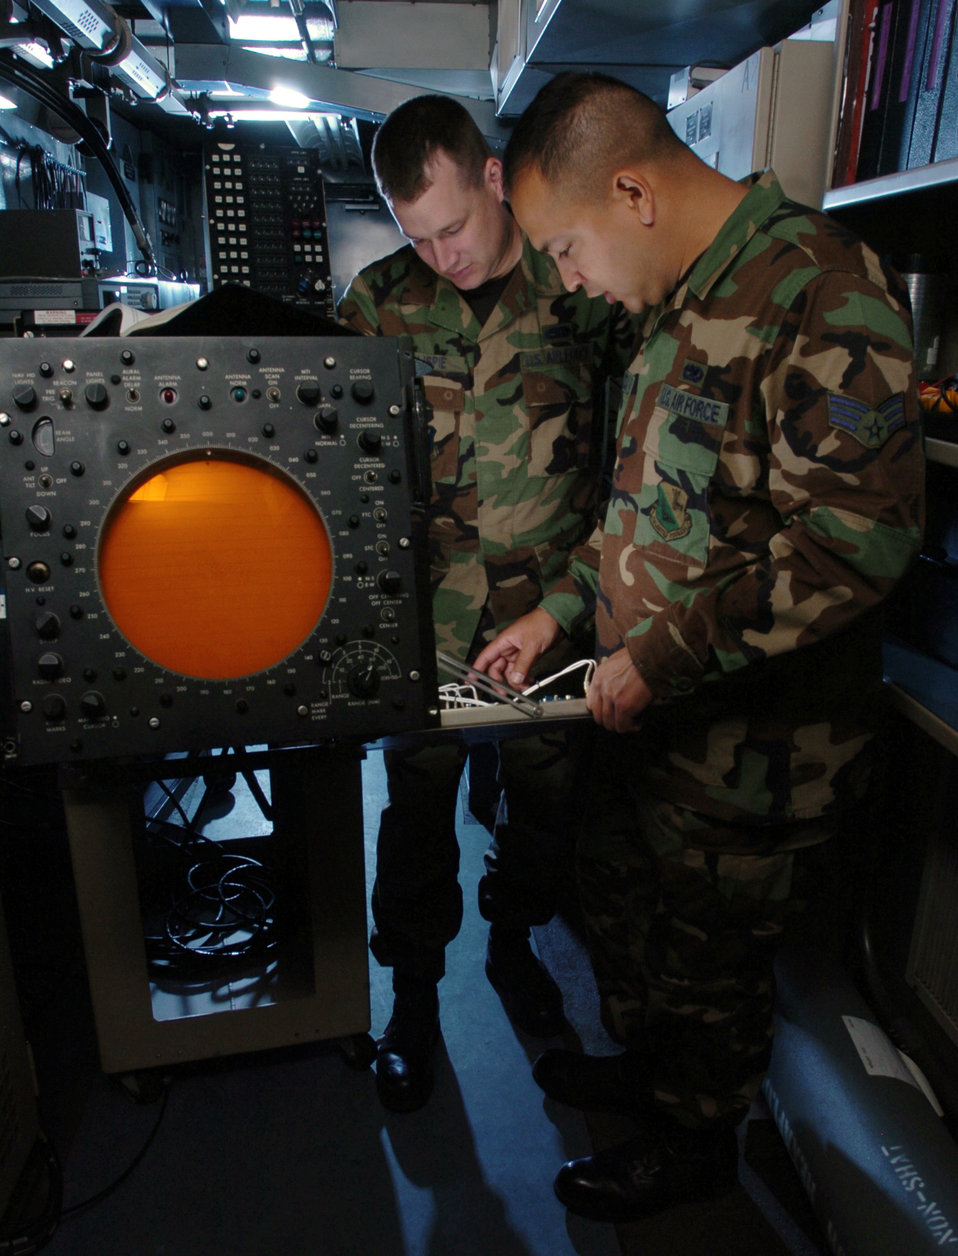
Yokota radar techs keep Pacific aircraft safe

YOKOTA AIR BASE, Japan -- Senior Airman Raul Sauceda (foreground) and Staff Sgt. Chris Gillispie inspect a radar scope at their facility here. The scope is used by air traffic controllers as a visual aid to guide incoming and outgoing aircraft. The Airmen are ground radar technicians with the 374th Communications Squadron.